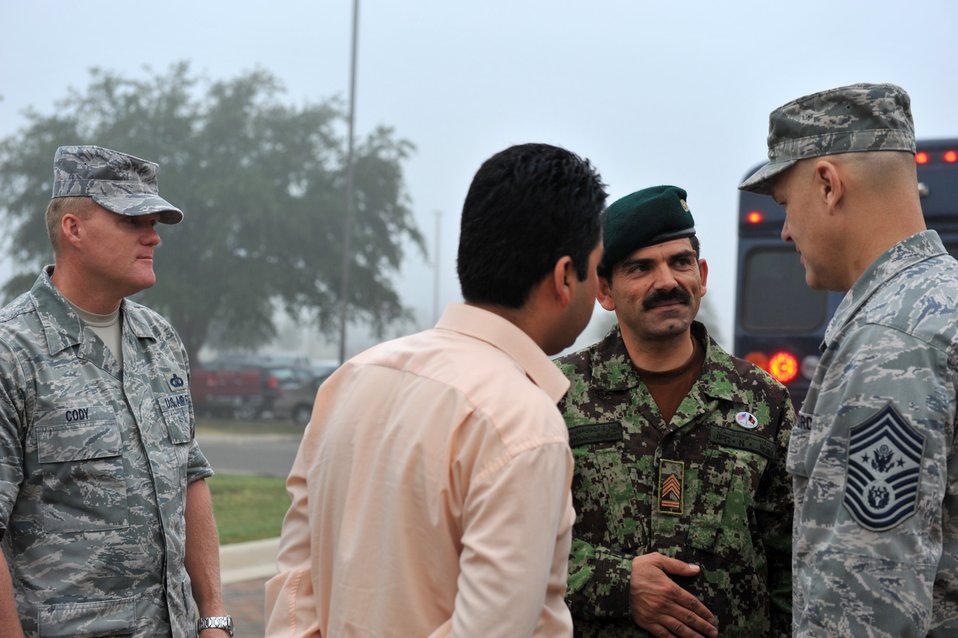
Chief Roy

Chief Master Sgt. of the Air Force James A. Roy speaks with Eid Mohammad, the command sergeant major of the Afghan air force, Oct. 27, 2010, at Lackland Air Force Base, Texas.